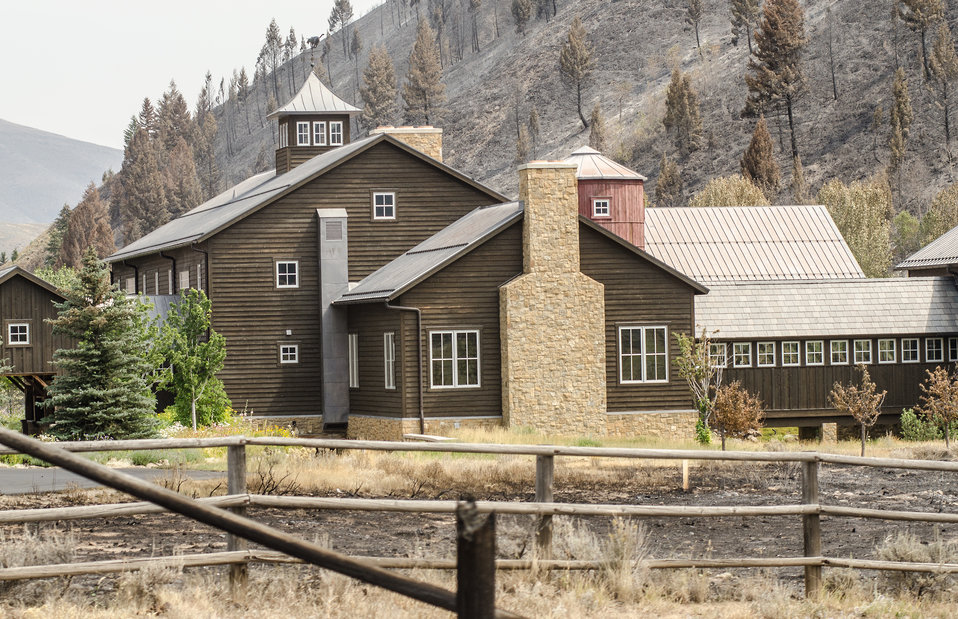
Thanks to the efforts of Wildland Firefighters, support crews and other first responders, homes and residential communities were (with few exception) saved from major damage, from the Beaver Creek Fire, near Hailey, ID, in the interface of U.S. Department of Agriculture (USDA) Forest Service (FS) and Sawtooth National Forest and Bureau of Land Management (BLM) lands, on Wednesday, Aug 21, 2013. In this community, major sections of hillside were charred, some suffered burnt trees, grass lands and fences.